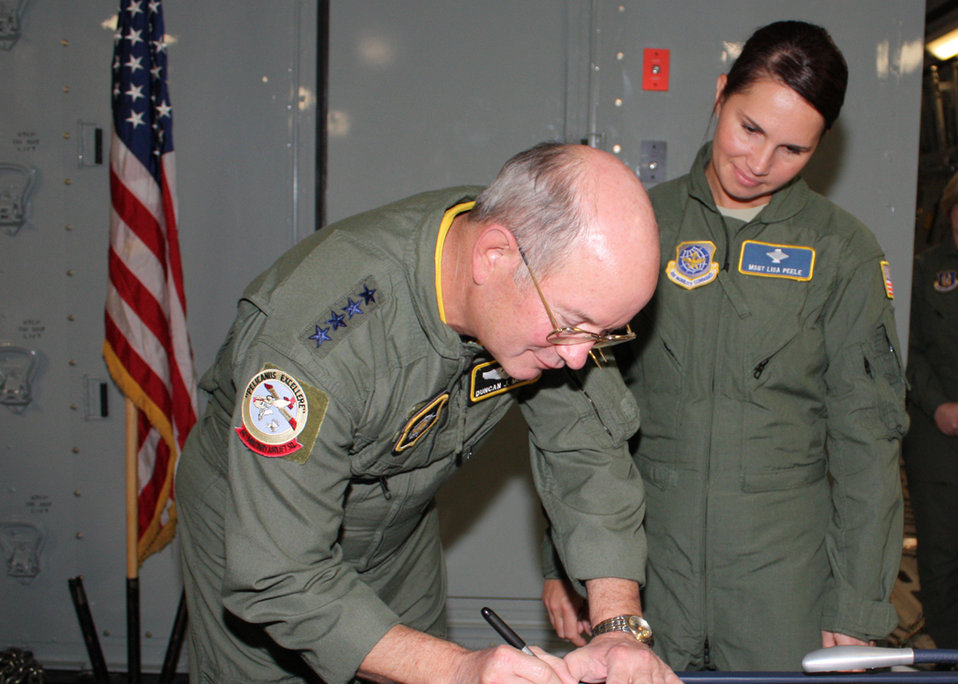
First Sergeant

Gen. Duncan McNabb, commander of U.S. Transportation Command, signs Master Sgt. Lisa Peele's reenlistment papers after officiating her reenlistment during her first C-17 Globemaster III flight. Sergeant Peele will attend the First Sergeant Academy beginning Oct. 25 and is designated to become the first sergeant for Charleston's 14th Airlift Squadron after graduation. Sergeant Peele's new assignment comes little more than two years after an accident claimed her husband's life and severely injured her. Her husband had recently attended first sergeant training and she was preparing to submit her formal application for the First Sergeant Academy when the accident occurred.